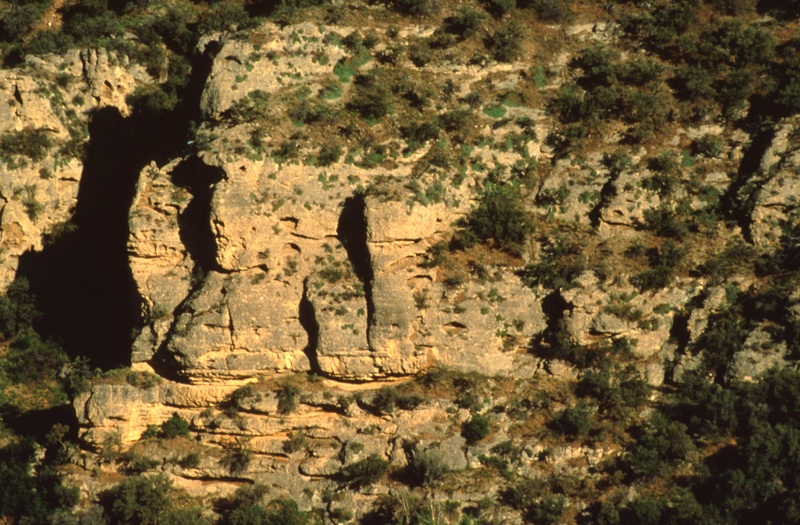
South Fork of the Snake River